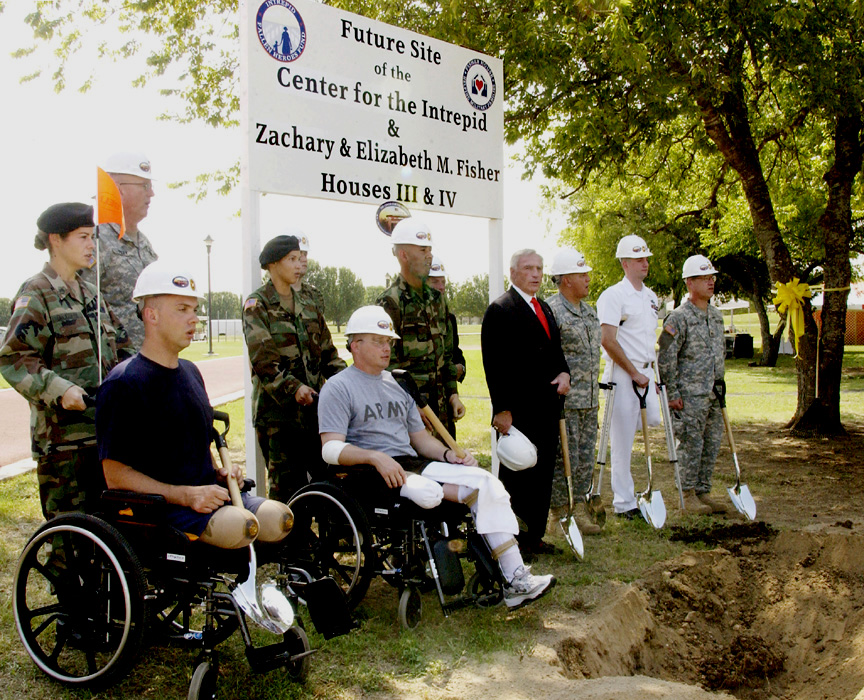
New rehabilitation center

FORT SAM HOUSTON, Texas -- Wounded warriors recovering at Brooke Army Medical Center here including (from left to right) Spc. Andy Soules, Army Master Sgt. Tom Carpenter, Sgt. Juan Arredondo and Navy hospital corpsman Derek McGinnis join the official party at the Sept. 22 groundbreaking for the new National Armed Forces Physical and Rehabilitation Center being built here.